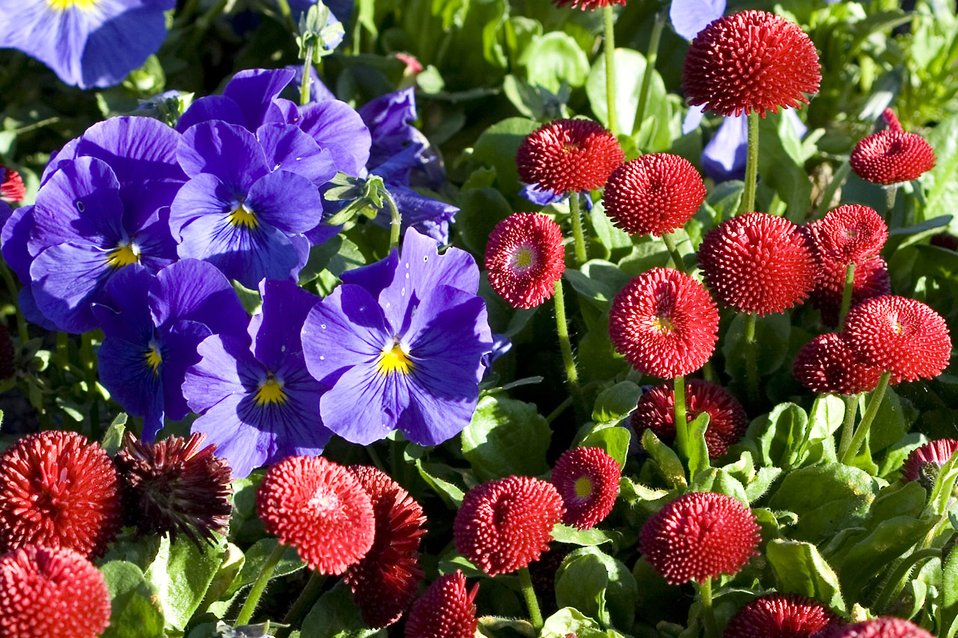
Pansy flowers

Pansy and daisy flowers - viola tricolor and bellis perennis.